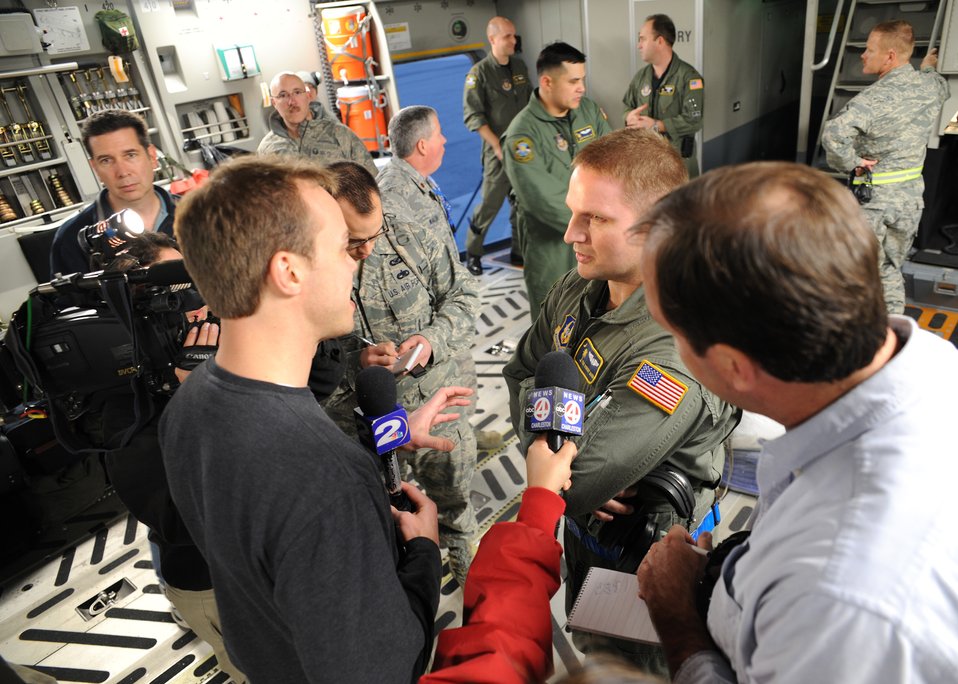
Haiti Humanitarian Effort

Tech. Sgt. Robert Mabry is interviewed by local media on a C-17 on the Charleston AFB flightline Jan. 14, 2010. The C-17 was used to transport equipment needed to aid the humanitarian effort in Haiti. Sergeant Mabry is a loadmaster with the 317th Airlift Squadron.(U.S.Air Force photo/Senior Airman Katie Gieratz)